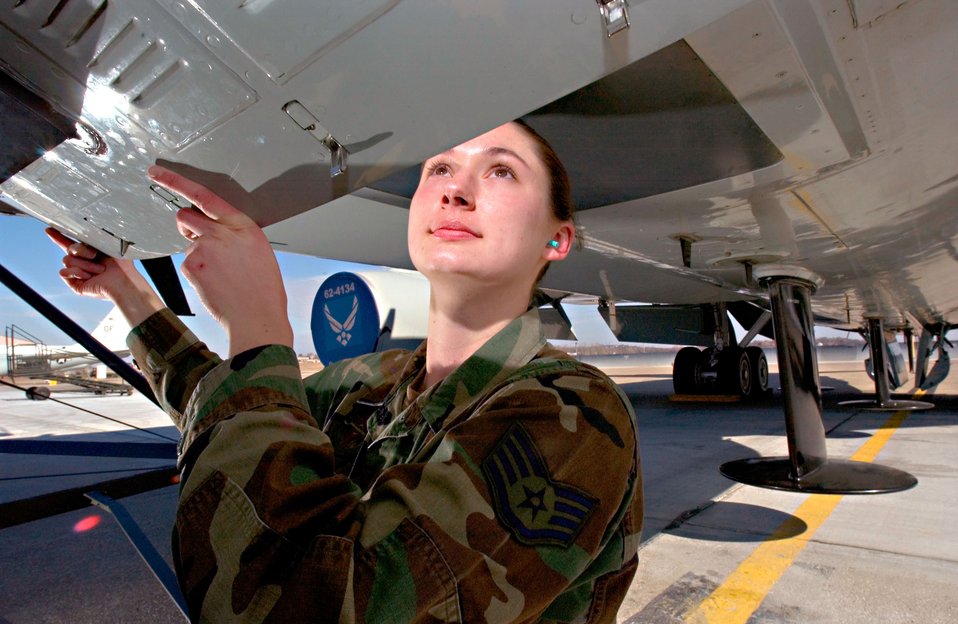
Antenna check

OFFUTT AIR FORCE BASE, Neb. -- Staff Sgt. Mary Beth Metcalf checks an antenna on a RC-135W Rivet Joint. She is an aircraft communication/navigation systems journeyman with the 55th Aircraft Maintenance Squadron.